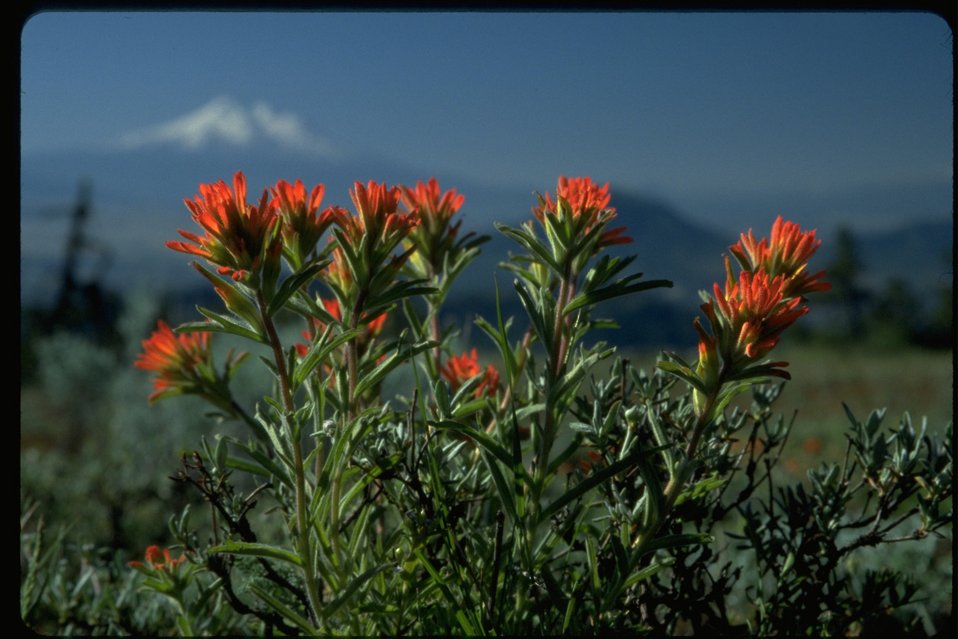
Close up of Indian Paintbrush with Mt. Shasta in background, Cascade-Siskiyou National Monument (CSNM).